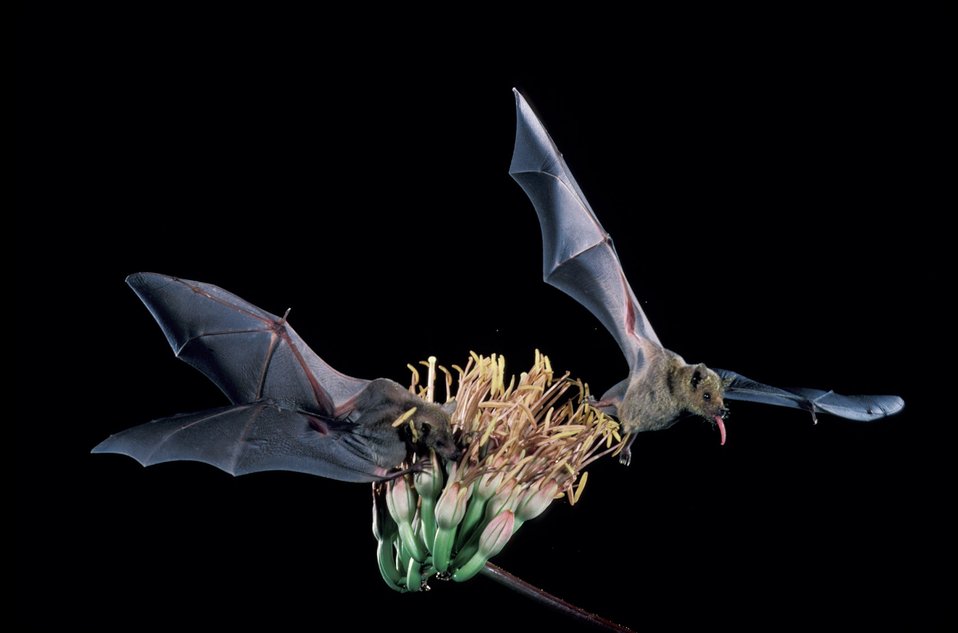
Leptonycteris curasoae, lesser long-nosed bat